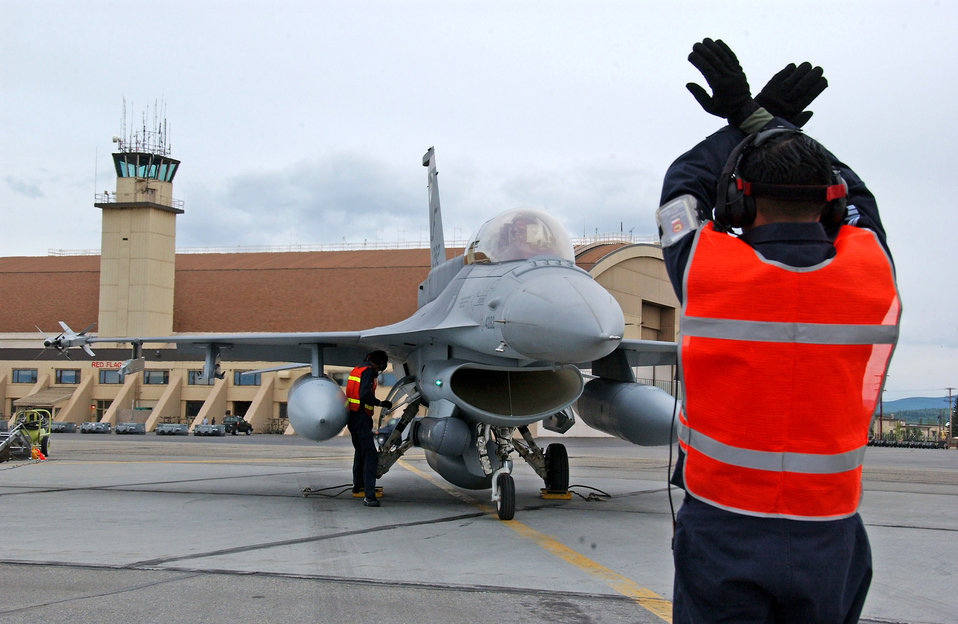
Joint forces combine for Red Flag-Alaska exercise

A Republic of Singapore Air Force crew chief marshals a Singapore F-16 after landing at Eielson Air Force Base, Alaska, May 30 for Red Flag-Alaska 07-2. The series of Pacific Air Forces commander-directed field training exercises for U.S. forces provides joint offensive counter-air, interdiction, close-air support and large-force employment training in a simulated combat environment.